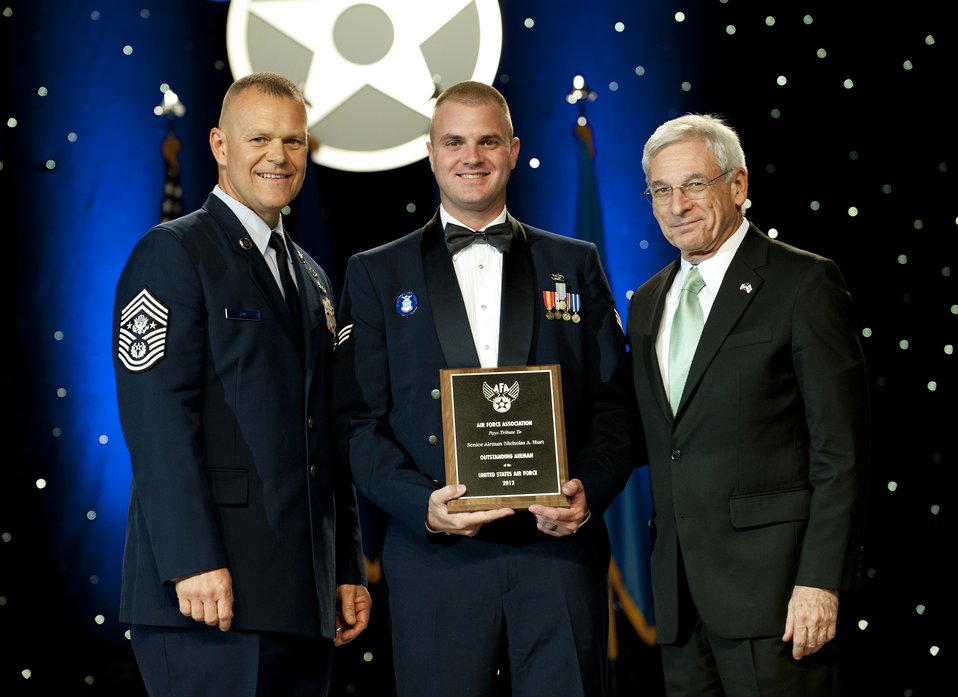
12 Outstanding Airmen of the Year

Chief Master Sgt. of the Air Force James Roy, left, and Sandy Schlitt, right, Air Force Association's chairman of the board, present a plaque to Senior Airman Nicholas Hurt during the 12 Outstanding Airmen of the Year reception and awards dinner in Washington, D.C., Sept. 17, 2012. The recipients were recognized for superior leadership, job performance, community involvement and personal achievements. Hurt is with the 721st Security Forces Squadron from Cheyenne Mountain Air Force Station, Colo.